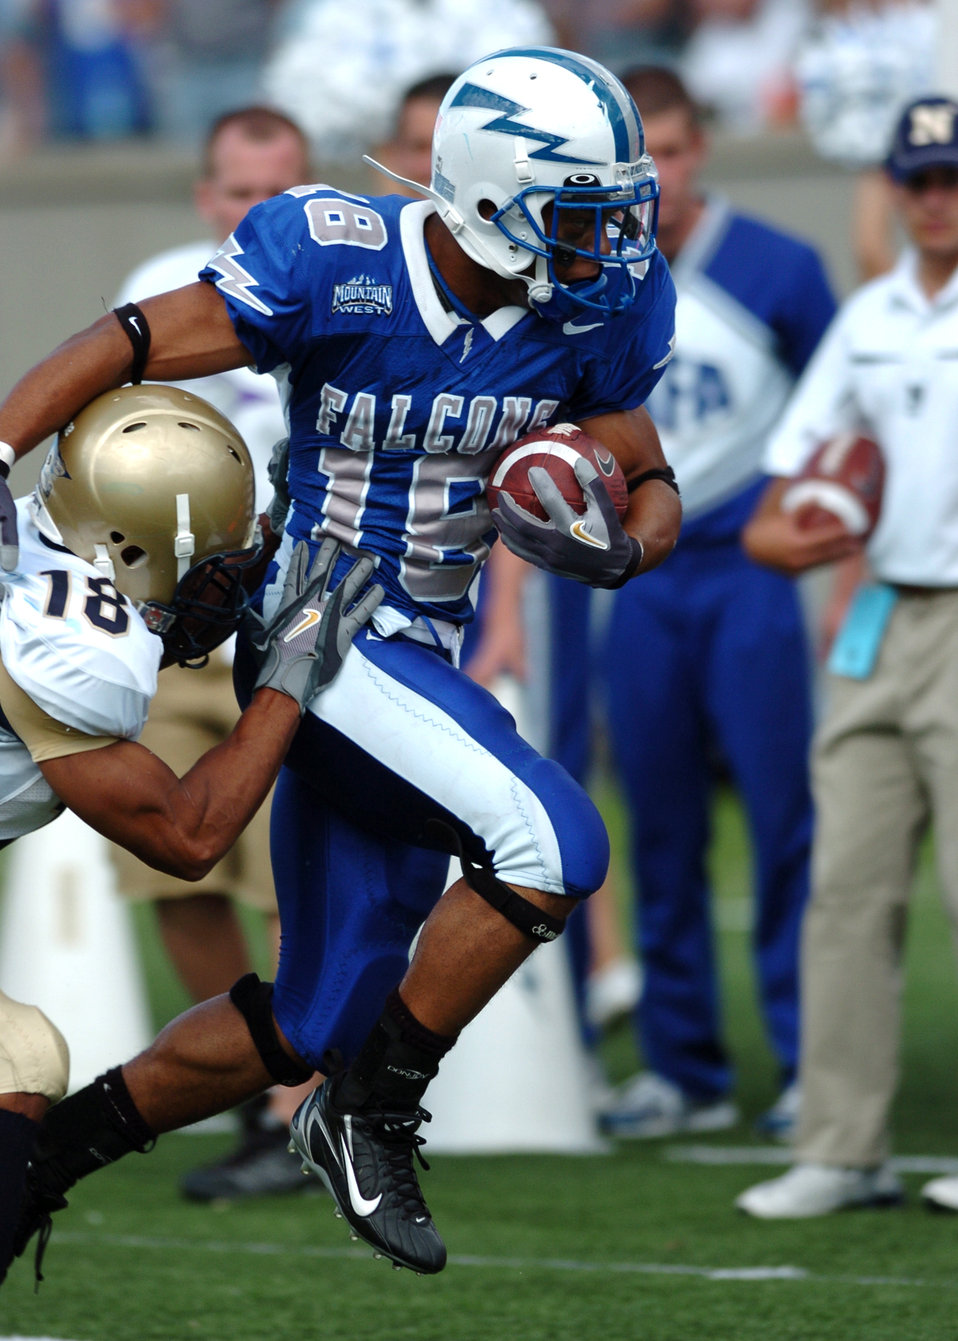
Prevent defense

Navy cornerback Rashawn King prevents an Air Force touchdown Saturday by forcing halfback Justin Handley out of bounds at the Navy 5 yard line on a pass from quarterback Shaun Carney. Carney found tight end Travis Dekker on the following play, but time ran out on the Falcons. Navy won, 24-17.